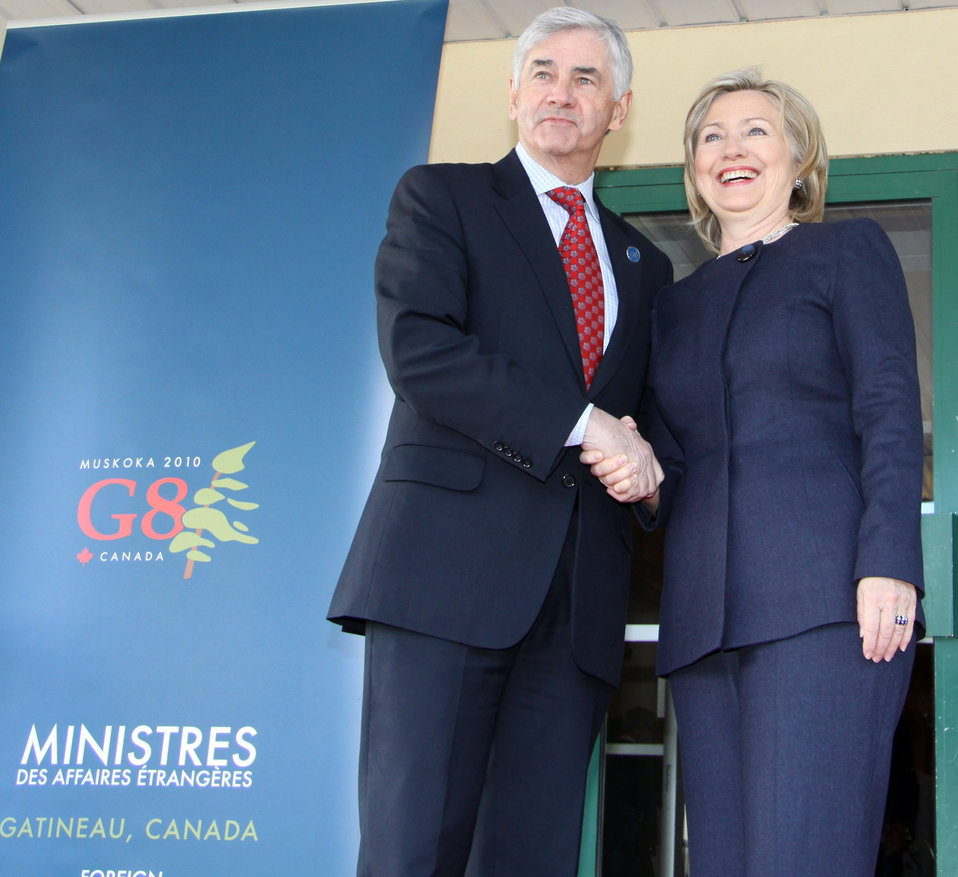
Secretary Clinton Meets With Canadian Foreign Minister

U.S. Secretary of State Hillary Rodham Clinton with Canadian Foreign Minister Lawrence Cannon during the G8 Foreign Ministers Meeting in Ottawa, Canada March 29, 2010.